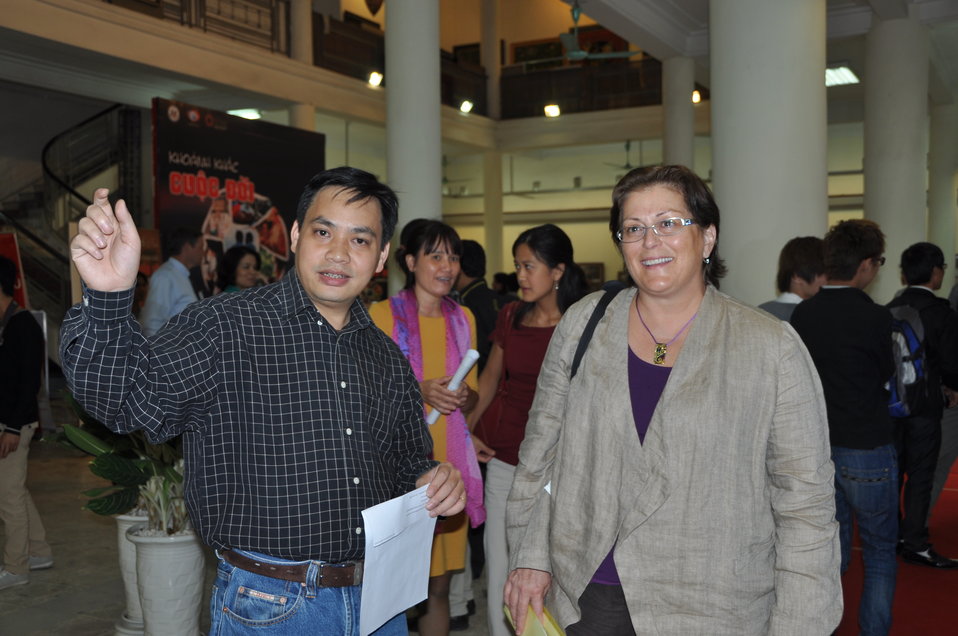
Moments in Life Exhibit: PEPFAR

U.S. Embassy Deputy Chief of Mission Claire Pierangelo visits the opening of the photo exhibit in Hanoi.